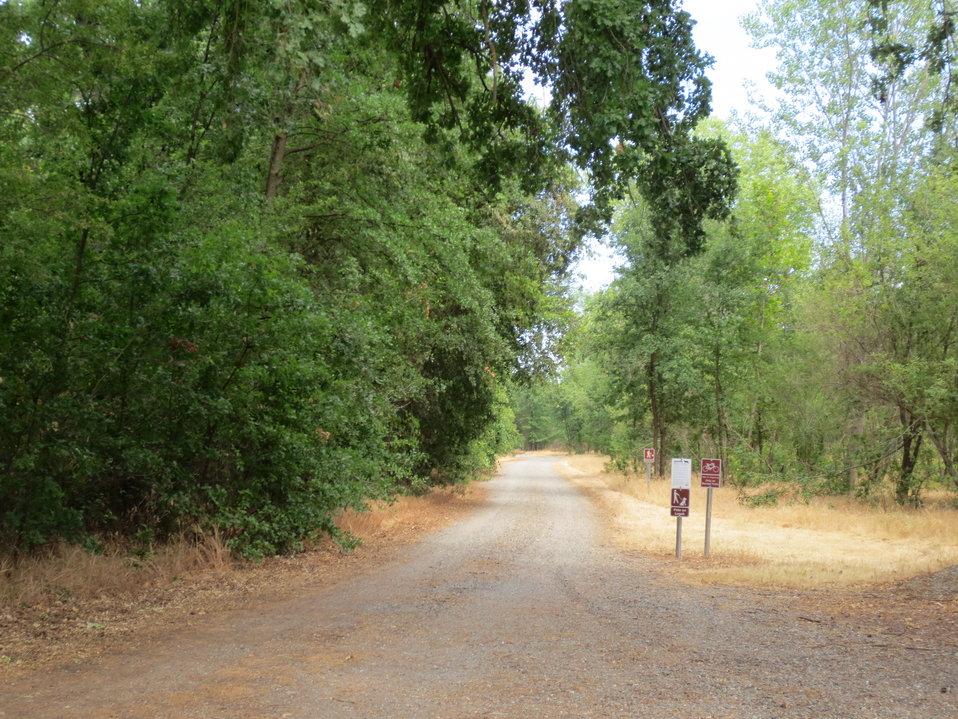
Enterance to the Rio Vista Unit of the Sacramento River NWR